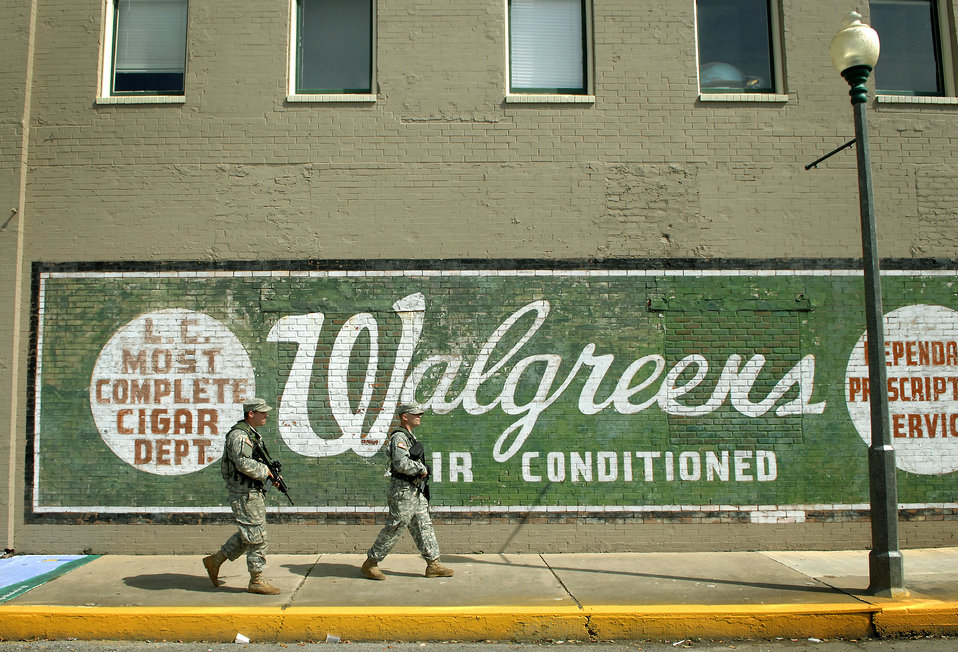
Protective Patrol

Corporal Jody Mahaffey and Private First Class Kevin Farr of the Army National Guard patrol the streets of downtown Lake Charles, La., providing a presence to deter looters in anticipation of the landfall of Hurricane Ike Sept. 12. Cpl. Mahaffey and PFC. Farr and assigned to the Louisiana National Guard, Bravo Company, 3rd Battalion, 156th Infantry.